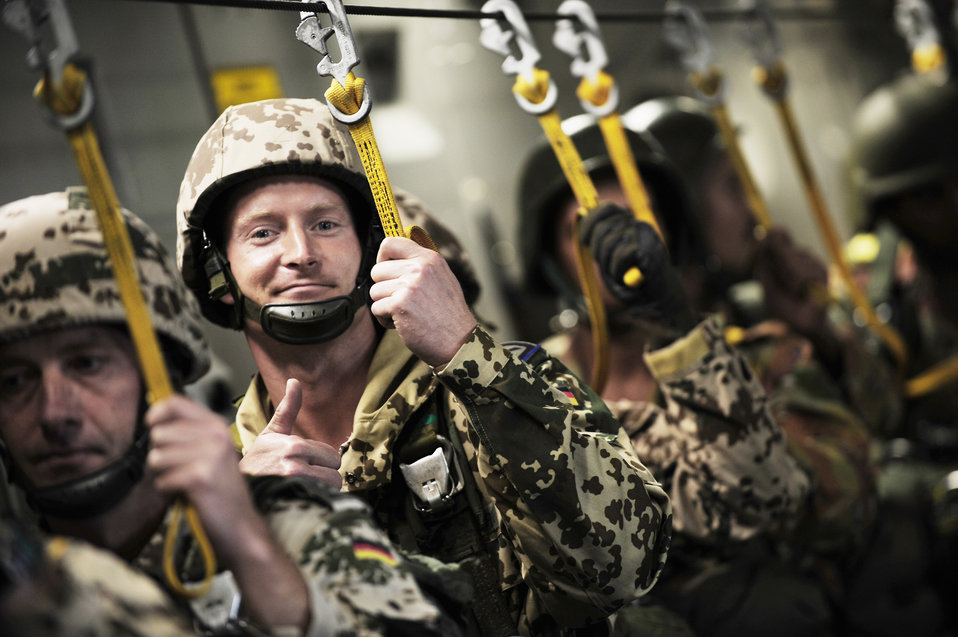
Friendship jump over Egypt

A German soldier gives a